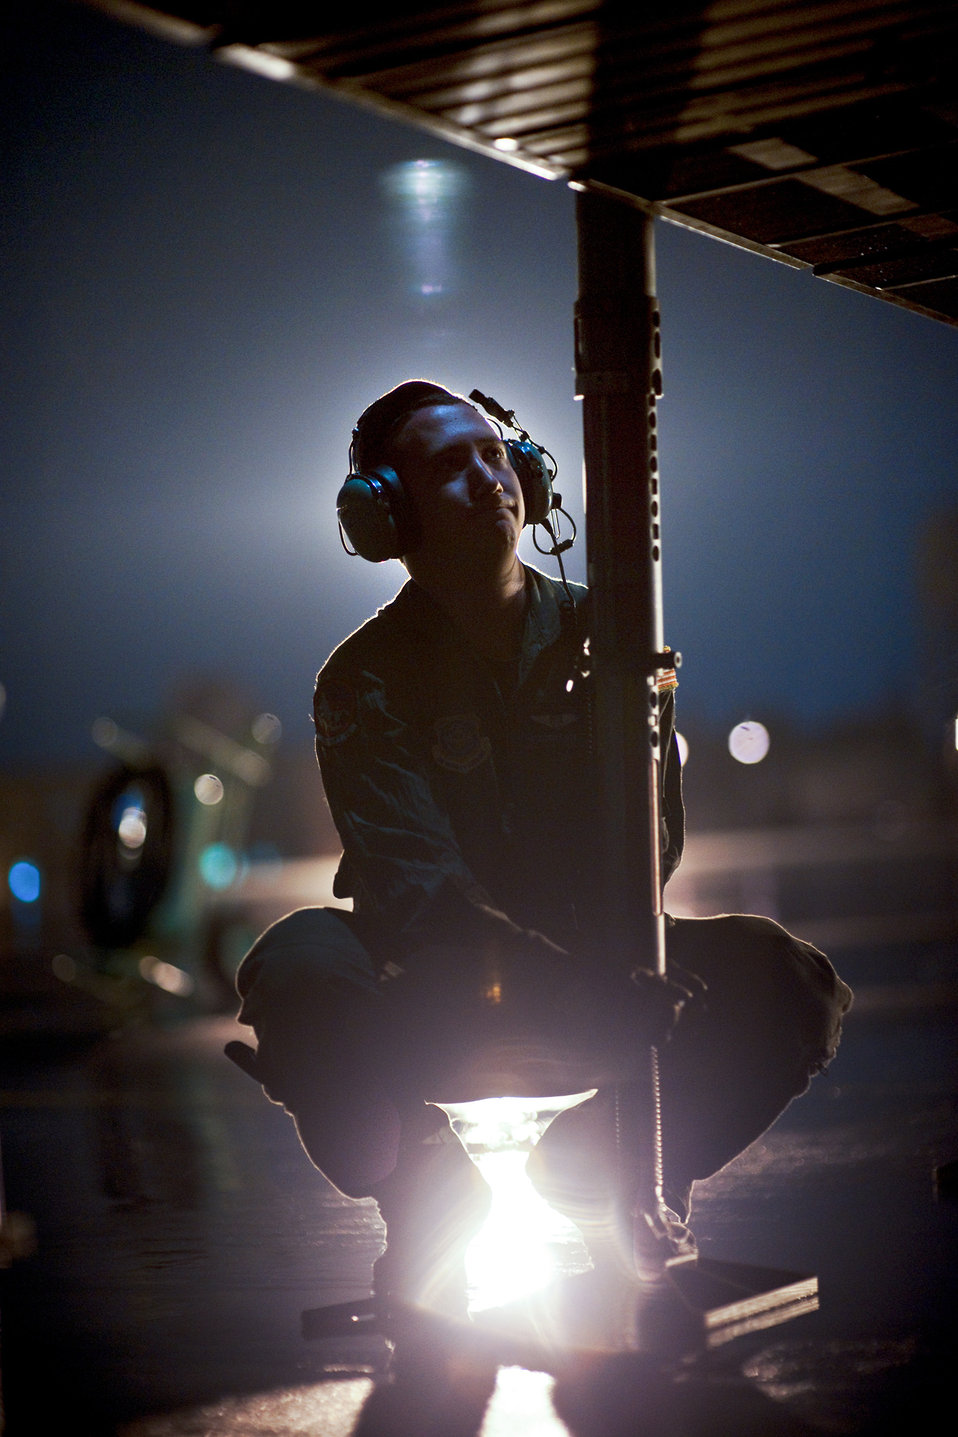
Rapid loading for the fight

Airman 1st Class Tory Steen adjusts a stand pole under the ramp of a C-5 Galaxy Sept. 15, 2010, at Yokota Air Base, Japan, before loading pallets into the aircraft using a large K-loader. Airman Steen is with the 22nd Airlift Squadron at Travis Air Force Base, Calif.